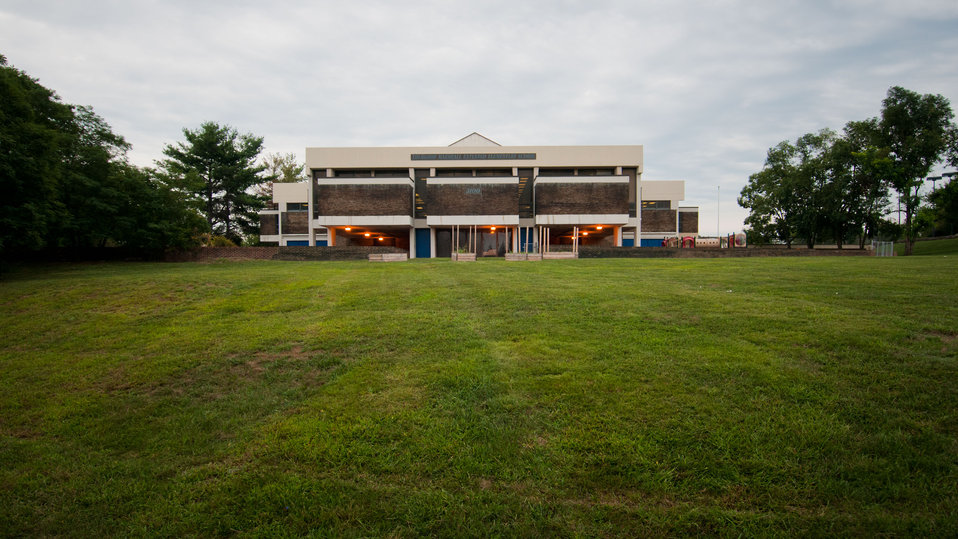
School front and existing raised garden beds, before U.S. Department of Agriculture (USDA) People’s Garden Executive Master Gardeners, friends, and family, along with Washington Capitals fans arrive to volunteer in the District of Columbia Public Schools’ (DCPS) Beautification Day, on Saturday, August 25, 2012, at Thurgood Marshall Elementary School, in Washington, D.C. Each year people are invited to help “spruce up” public school facilities in preparation for the first day of school. More than 70 volunteers pitched in at this large school facility. The People’s Garden effort involves building and painting raised planter boxes, then preparing the soil mixture so they are “ready to grow.” Additionally, a team that includes descendants of U.S. Supreme Court Justice Thurgood Marshall assembles a prefabricated garden toolshed. The Justice’s son, John Marshall leads the team, which includes Brianna the Justice’s great-grand daughter in one of many multi-generational efforts at this school today. Washington Capitals Forward Mike Riberio, his family and mascot Slapshot participated in every project underway at Marshall School. From the outside gardens, to inside murals, and robotics worktable construction, the teams made their goals.